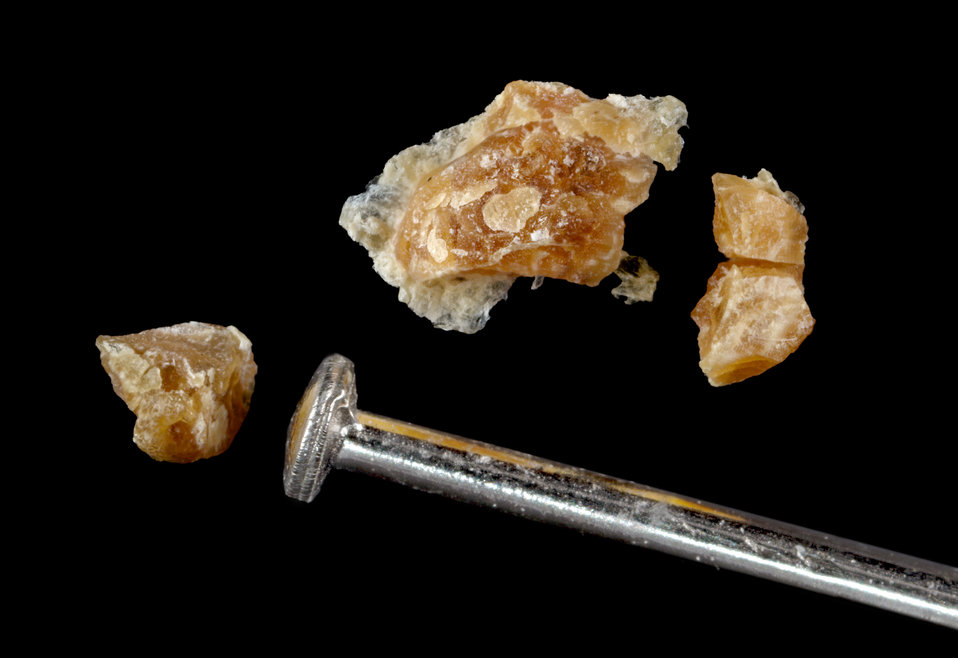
This image depicts a number of what were 'suspected' smallpox scab fragments, from the archives of the Virginia Historical Society (VHS).